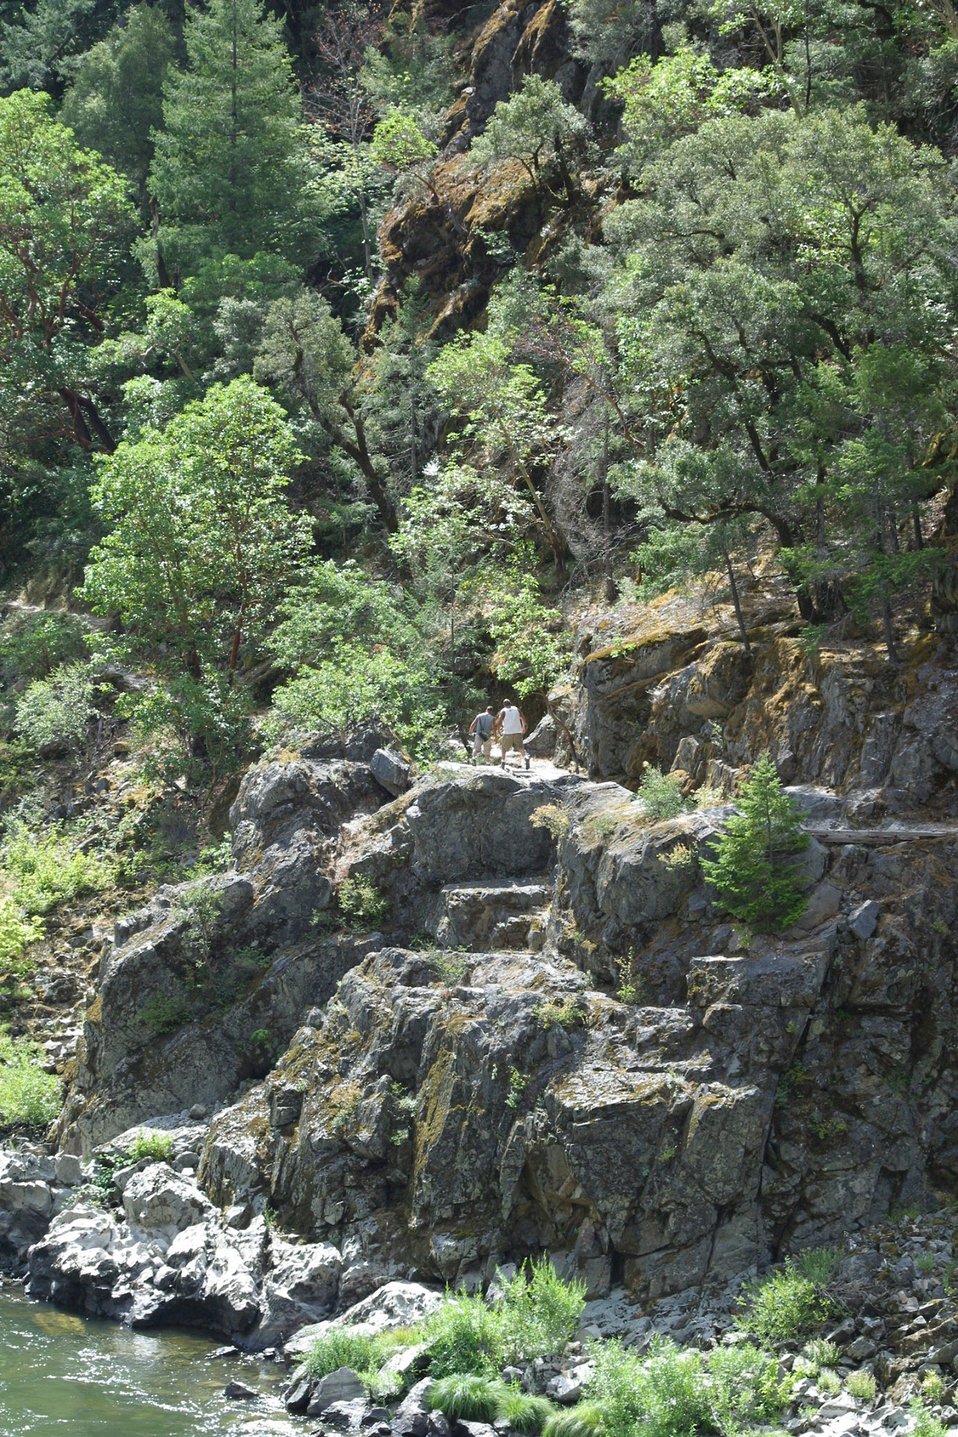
Hiking Rainie Trail between Grave Creek and Rainie Falls.